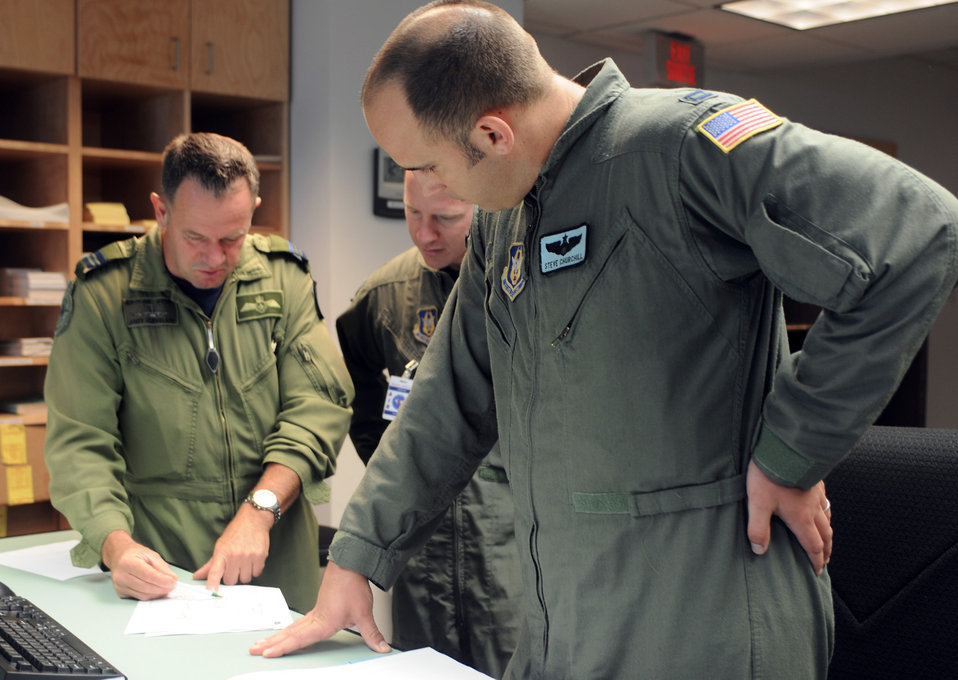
Dover reservists work to form Canadian sister squadron program

Canadian air force Maj. Andy Cleveland (left) discusses flight plans with Capt. Steve Churchill and Capt. Dan Zappe, pilots with the Air Force Reserve Command's 512th Airlift Wing at Dover Air Force Base, Del. Airmen from the Dover wing flew to Canadian Forces Base Trenton, Ontario, to spend three days with Royal Canadian Air Force members to forge a partnership and identify future training opportunities for flying, aerial port operations, airlift control and maintenance procedures.